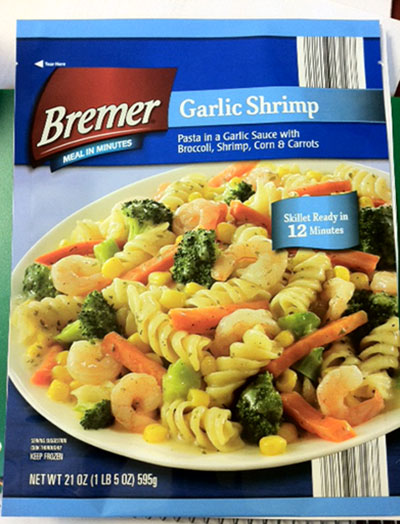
RECALLED - Skillet Meals

November 4, 2013 – Product Recall – Gourmet Express LLC. Voluntarily Recalls 32 Ounce Packages of 'Fusia Chicken Lo Mein' and 21 Ounce Packages Of “Bremer 3 Cheese Chicken” and “Bremer Garlic Shrimp' Due to Possible Undeclared Eggs.